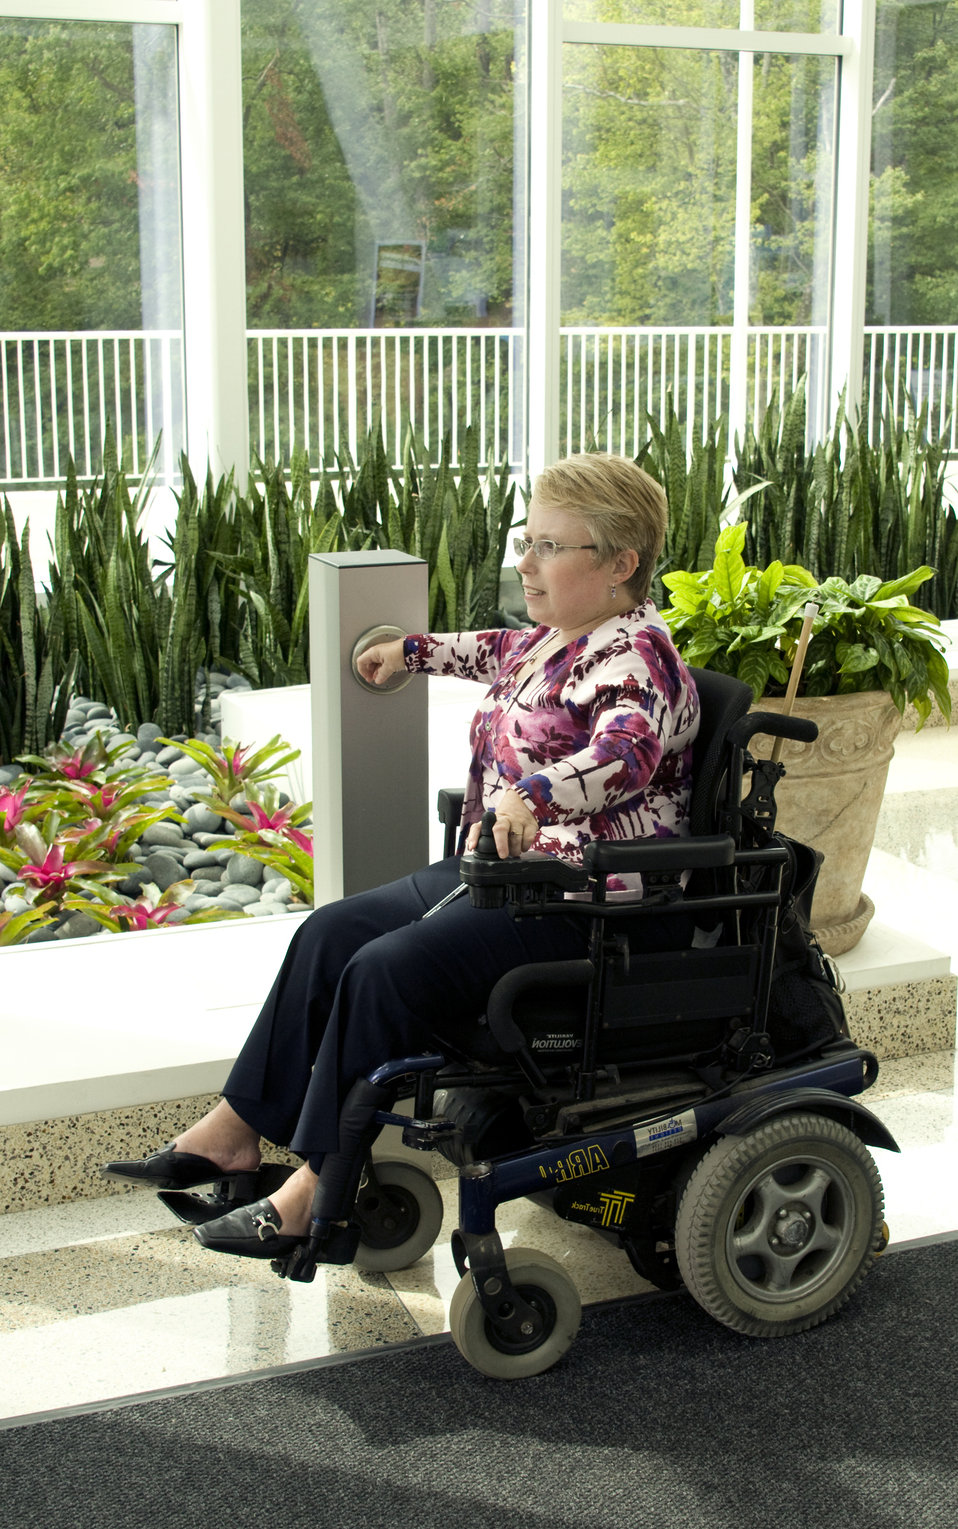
Seated in her wheelchair, the woman pictured here had completed her activities at one of the Centers for Disease Control's (CDC) campuses in Atlanta, Georgia, and was in the process of exiting a building, using her right hand to press the easily-accessible, push-button pad door opener.